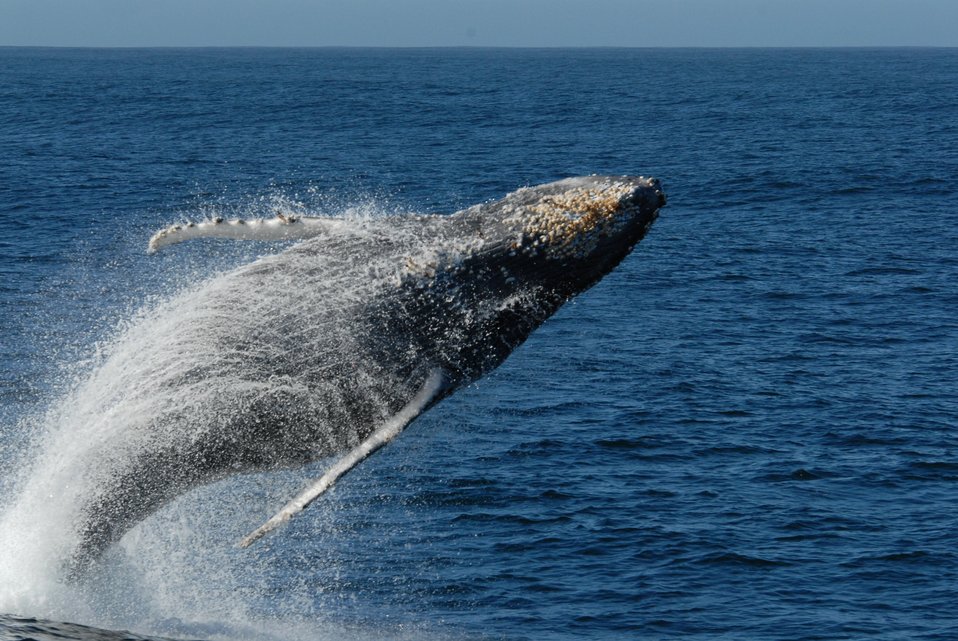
Humpback whale breaching